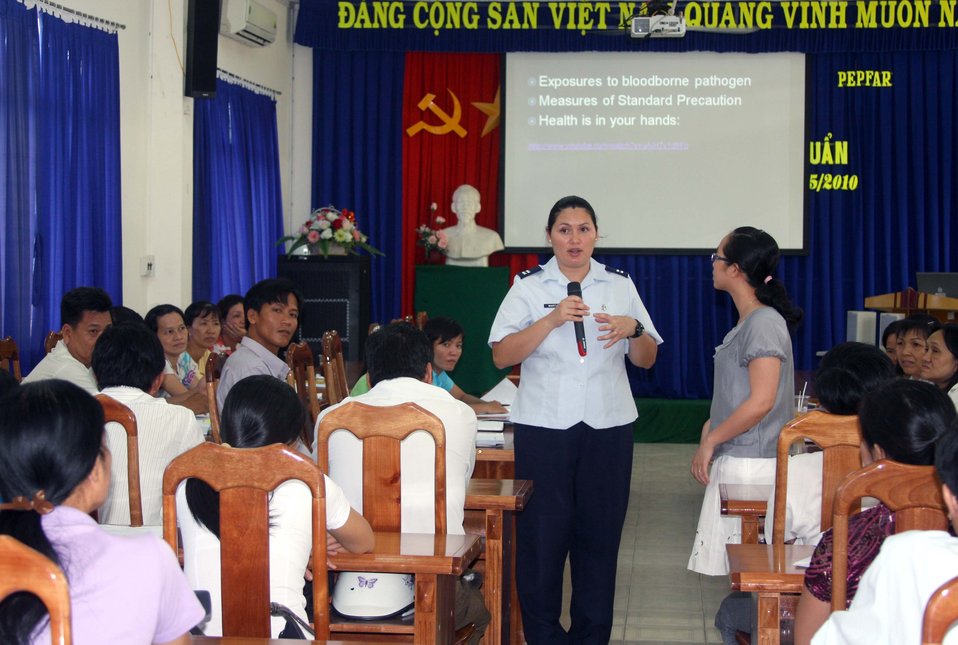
U.S., Vietnam talk infectious diseases during Pacific Angel 2010

Capt. Katrina Martinez speaks at a forum to exchange information with Vietnamese health professionals May 11, 2010, at Can Tho Medical College in Can Tho, Vietnam. As part of Pacific Angel 2010, the forum discussed infections disease control and prevention. Captain Martinez is assigned to the 36th Medical Group at Andersen Air Force Base, Guam.